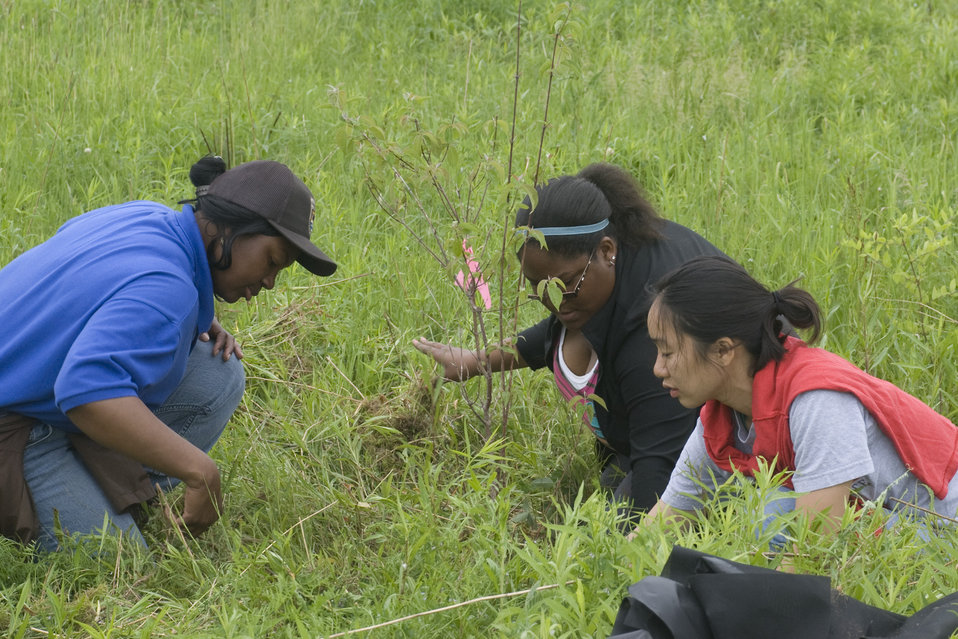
Service employee and students planting trees

CIP Interns planting trees for a service project.